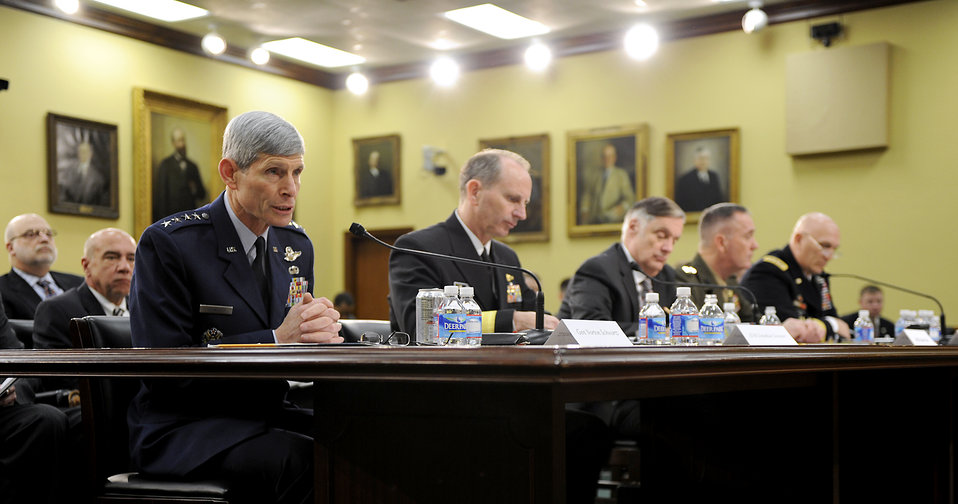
CSAF testifies for House Appropriations Committee

Air Force Chief of Staff Gen. Norton Schwartz testifies before the House
Appropriations Committee's Subcommittee on Military Construction, Veterans
Affairs and Related Agencies on the service's fiscal 2013 budget request on
March 1, 2012, in Washington D.C. Chief of Naval Operations Adm. Jonathan
Greenert, Under Secretary of Defense and Chief Financial Officer Robert F.
Hale, Assistant Commandant of the Marine Corps Gen. Joseph F. Dunford, Jr.,
and Army Chief of Staff Gen. Raymond Odierno also provided testimony on
behalf of their respective services.